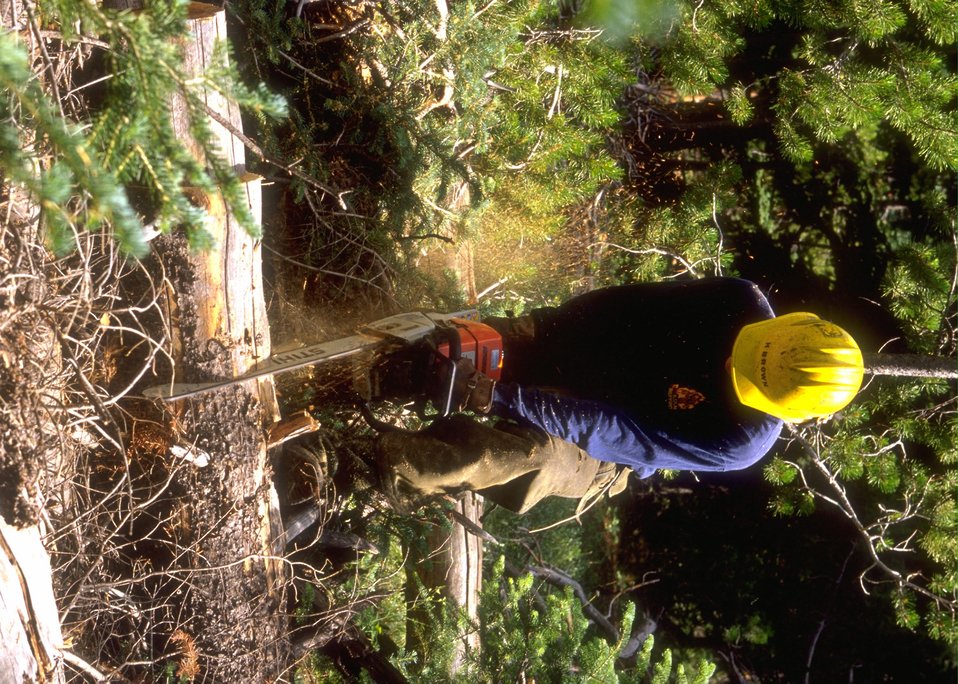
Fuels reduction management in progress at Muddy Mountain Recreation Area, Casper Field Office.